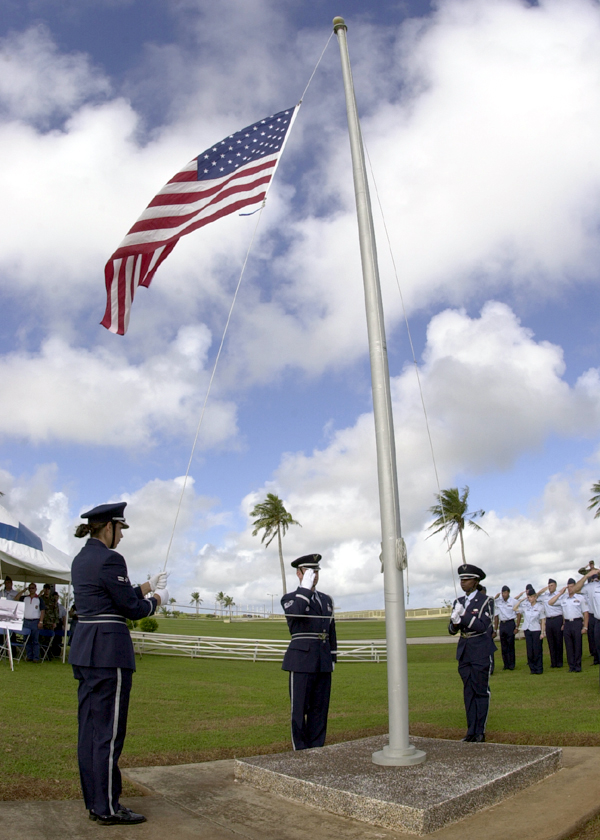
Honoring fallen airmen

ANDERSEN AIR FORCE BASE, Guam -- Airmen of the Andersen Blue Knights Honor Guard position the flag at half staff during a ceremony here Dec. 18. The ceremony honored the men lost during the Linebacker II campaign.